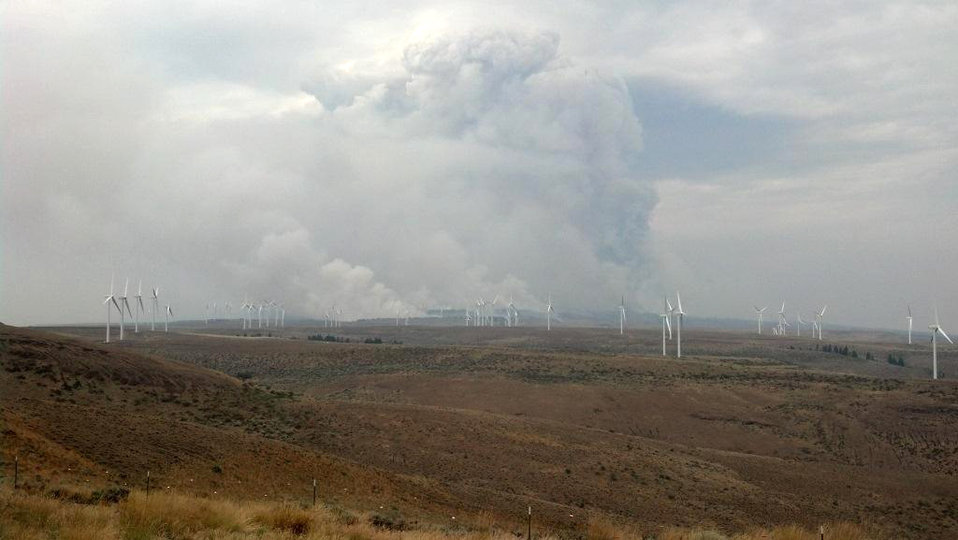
The Colockum Tarps Fire southwest of Malaga, WA began on Jul. 27, 2013 is under investigation. The fire has consumed approximately 70,000 acres and is approximately 25% contained.